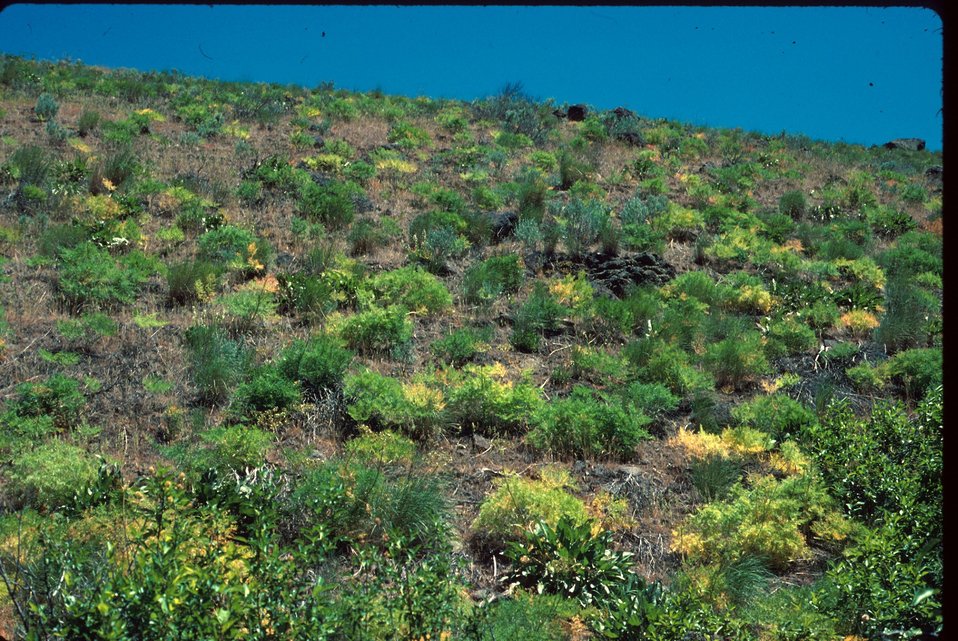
Lomatium Wildflower